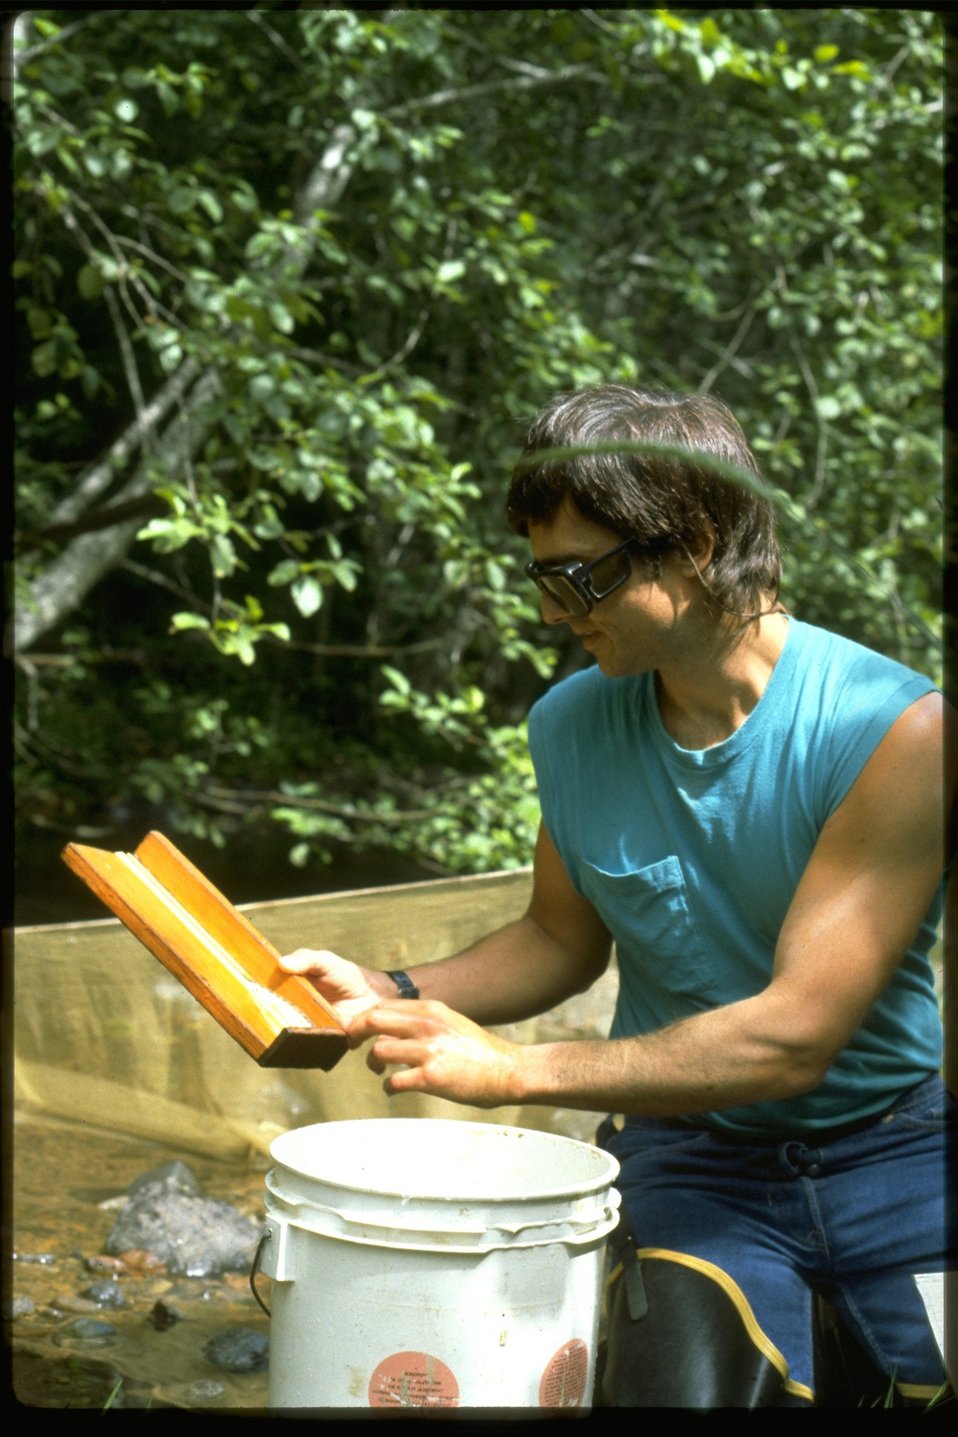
Fish Counting.